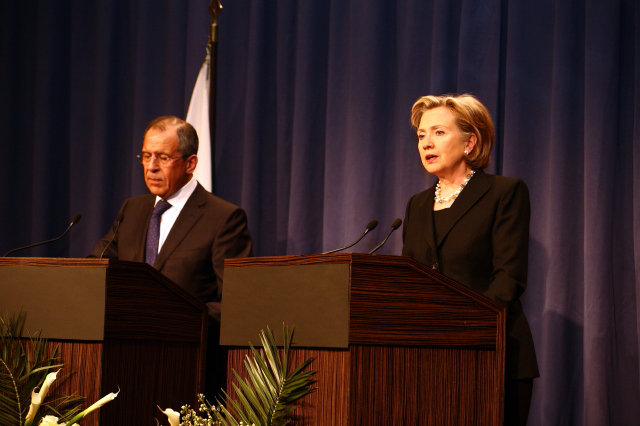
IPress Conference With Russian Foreign Minister

Press conference after dinner meeting between U.S. Secretary of State Hillary Rodham Clinton and Russian Foreign Minister Sergey Lavrov in Geneva, Switzerland March 6, 2009.